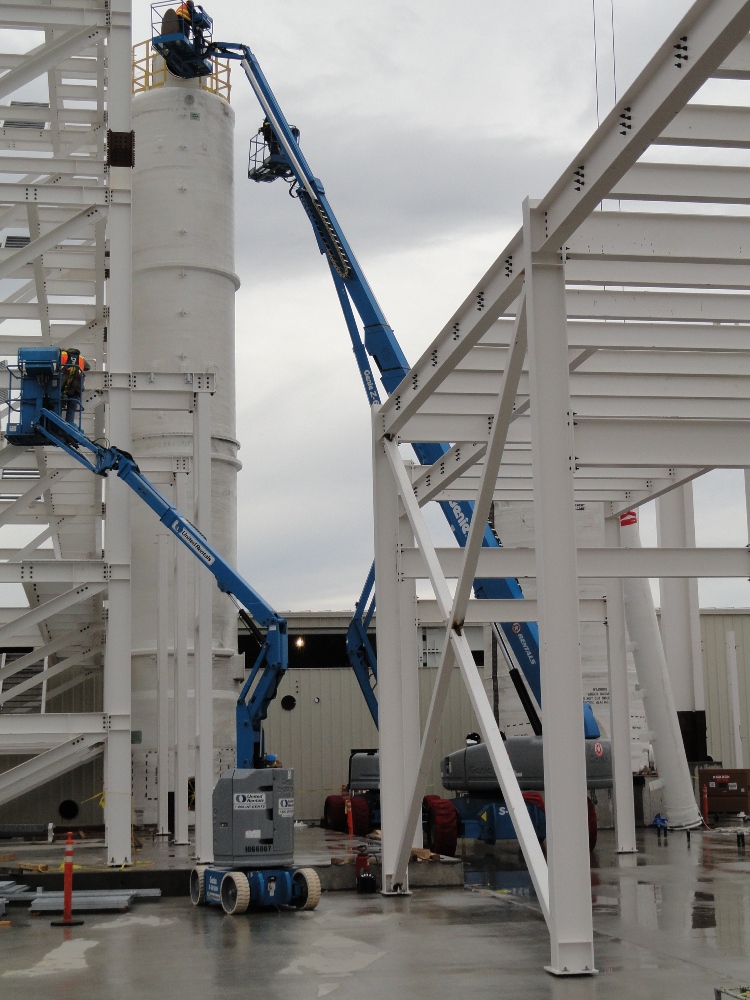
Recovery Act Supports Construction of Site’s Largest Groundwater Treatment Facility

Recovery Act workers in various stages of construction of what will be the largest groundwater treatment facility at the Hanford Site.